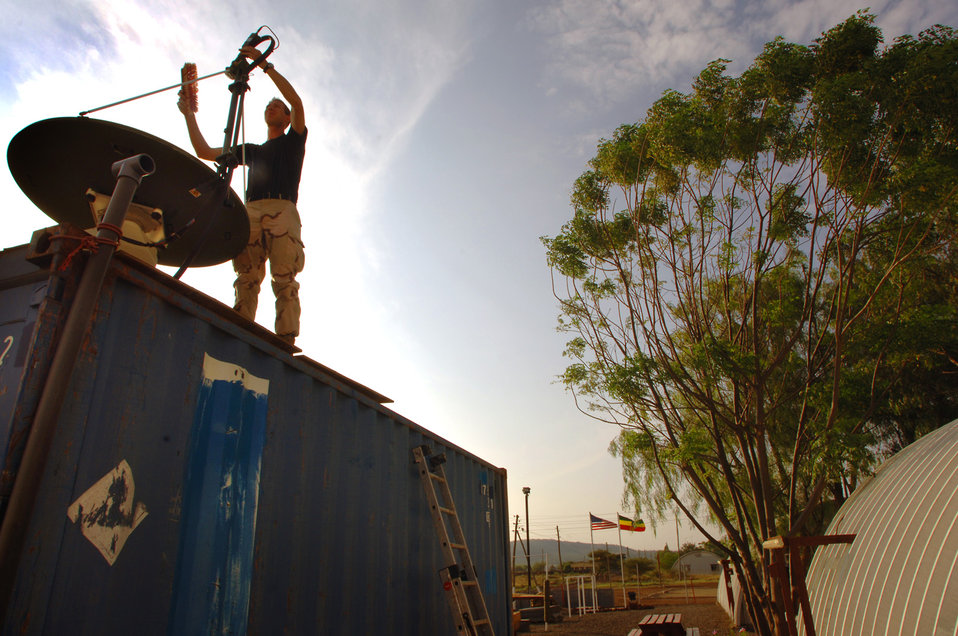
Combined Joint Task Force-Horn of Africa

Senior Airman Jeremy Cole cleans and checks the connections on a communications dish that transmits and receives data and voice signals for Contingency Operating Location Bilate, the southern-most U.S. COL in Ethiopia located 420 nautical miles south of Combined Joint Task Force - Horn of Africa headquarters in Djibouti.